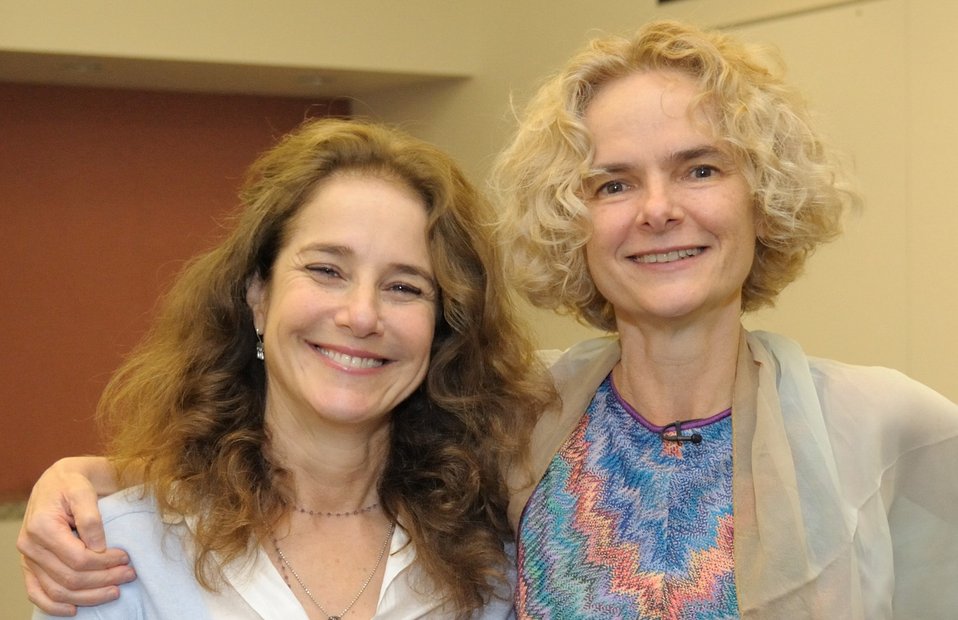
1-Winger and Volkow

Actress Debra Winger and NIDA Director Dr. Nora Volkow pose prior to NIDA’s Addiction Performance Project, held Aug 5, 2011 on the NIH Campus